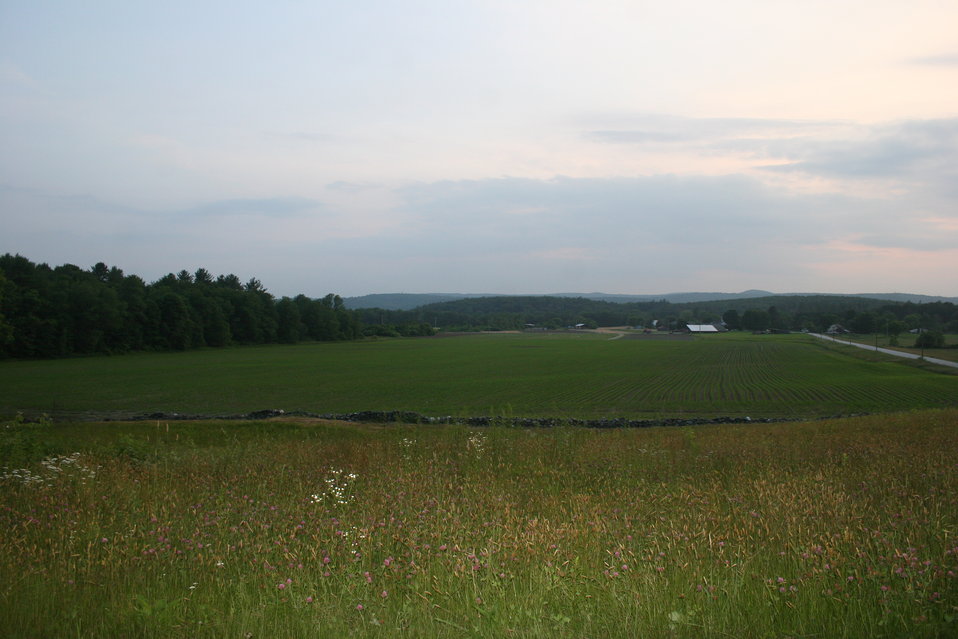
View from barn

View from the barn near Charlestown, NH.